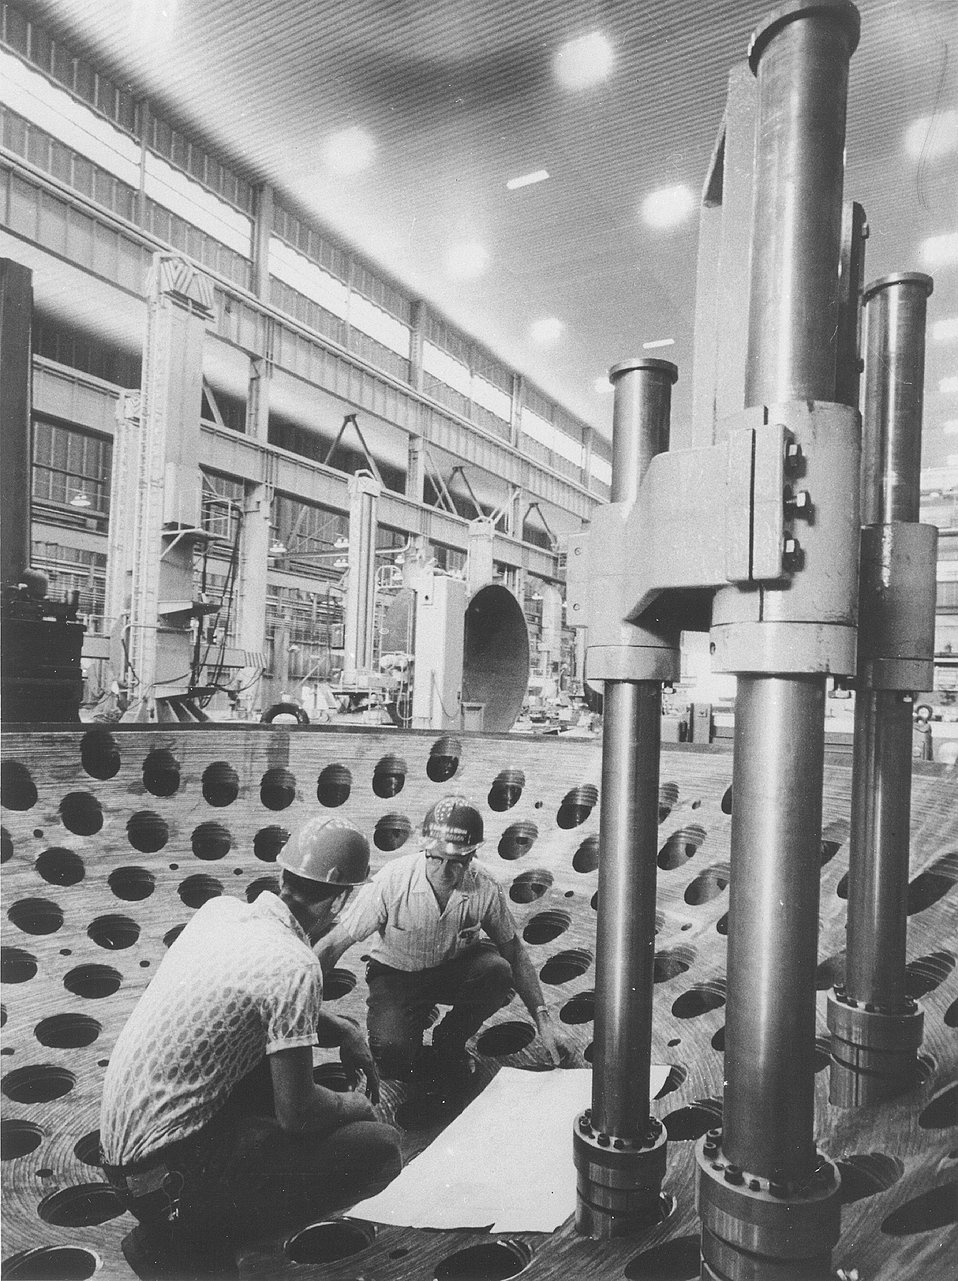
This photo shows the bottom section of the reactor vessel and the holes through which the control rods will pass. Circa 1967.